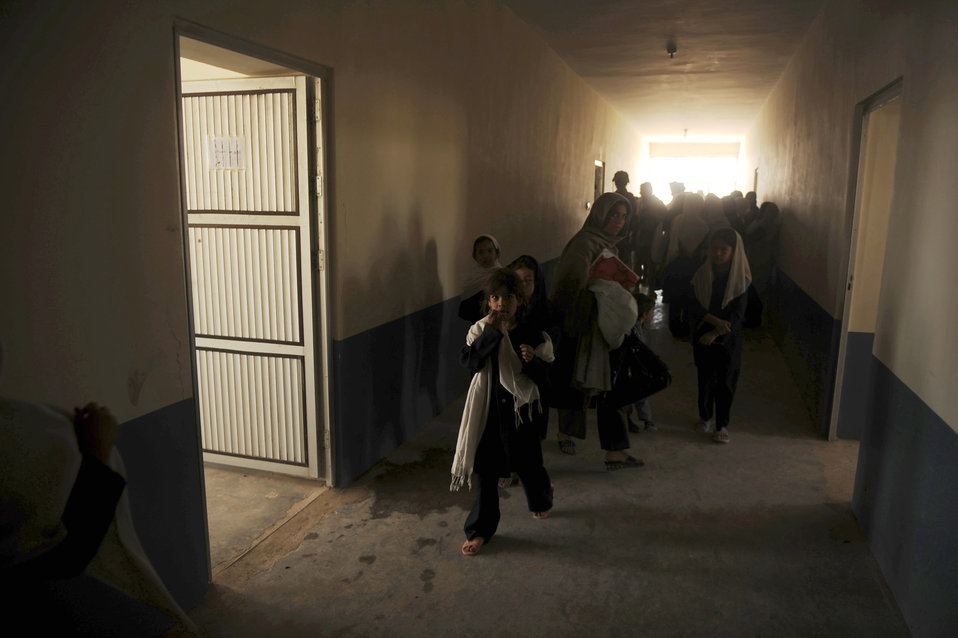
PRT beautifies Afghan girls school

Afghan students are released for the day at the Bibi Khala Girls School May 31, 2010, in Qalat City, Afghanistan. The school teaches children math, Pashtu, traditional Afghan learning and English.